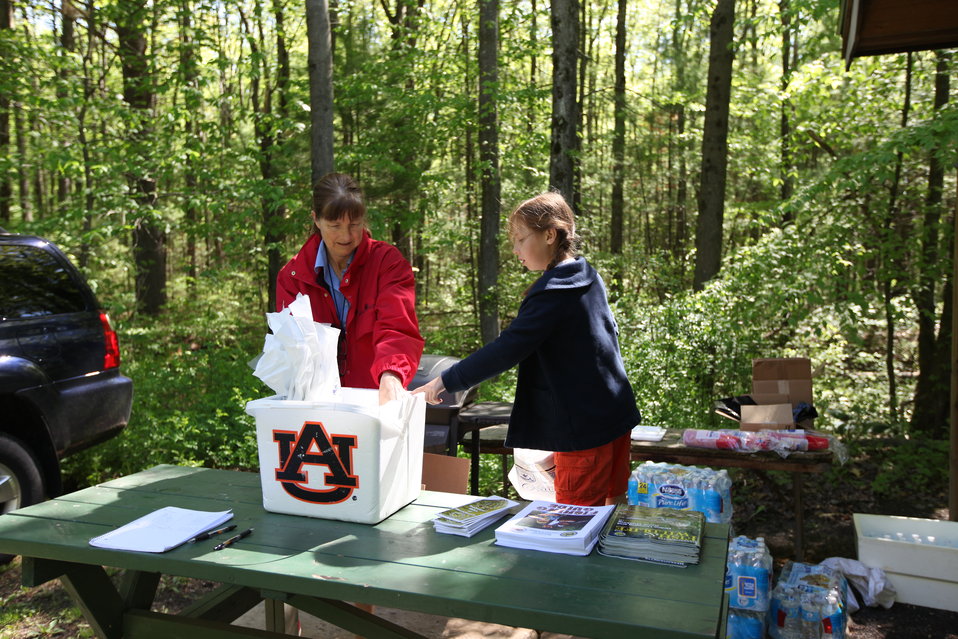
Youth Fishing Derby 2012

Megan Nagel/USFWS